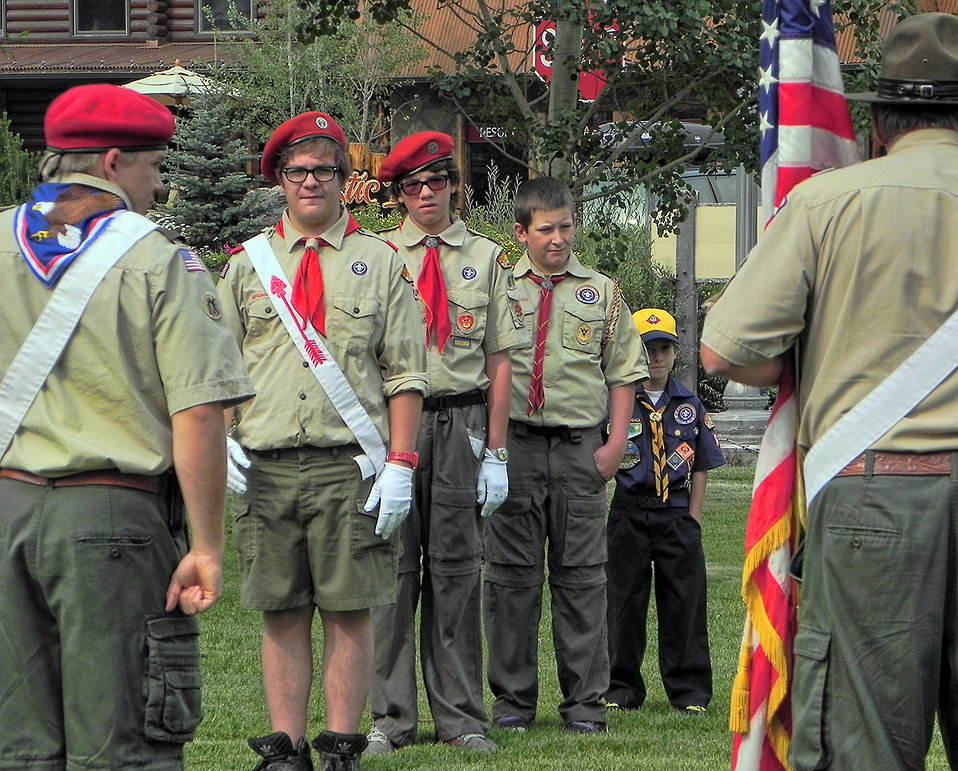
Preparing for the Presentation of the Colors

Members of the Jackson District Boy Scouts line up as they prepare to carry the US and Wyoming flags into the National Elk Refuge's centennial ceremony.

Credit: USFWS / BJ Baker, National Elk Refuge volunteer